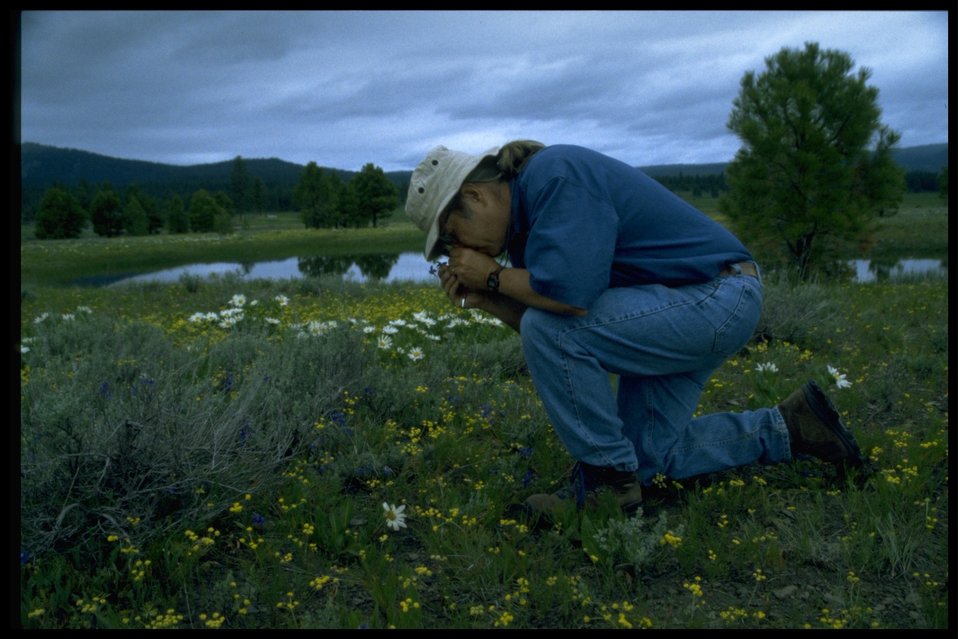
Photographing white-rayed mule's ears (Wyethia helianthoides).